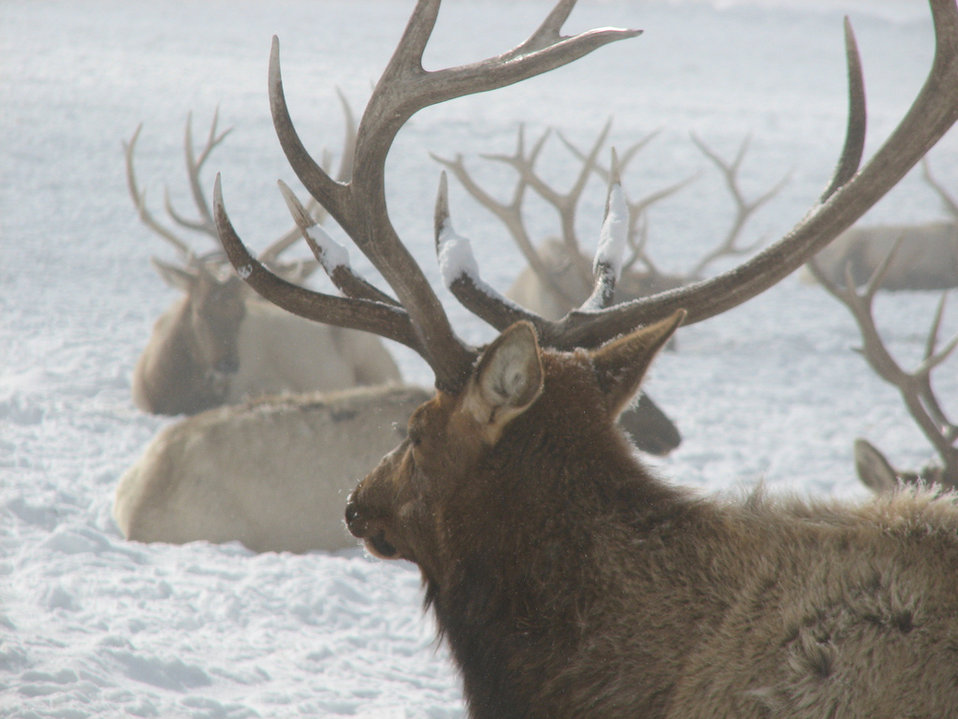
elk herd at rest

National Elk Refuge, WY